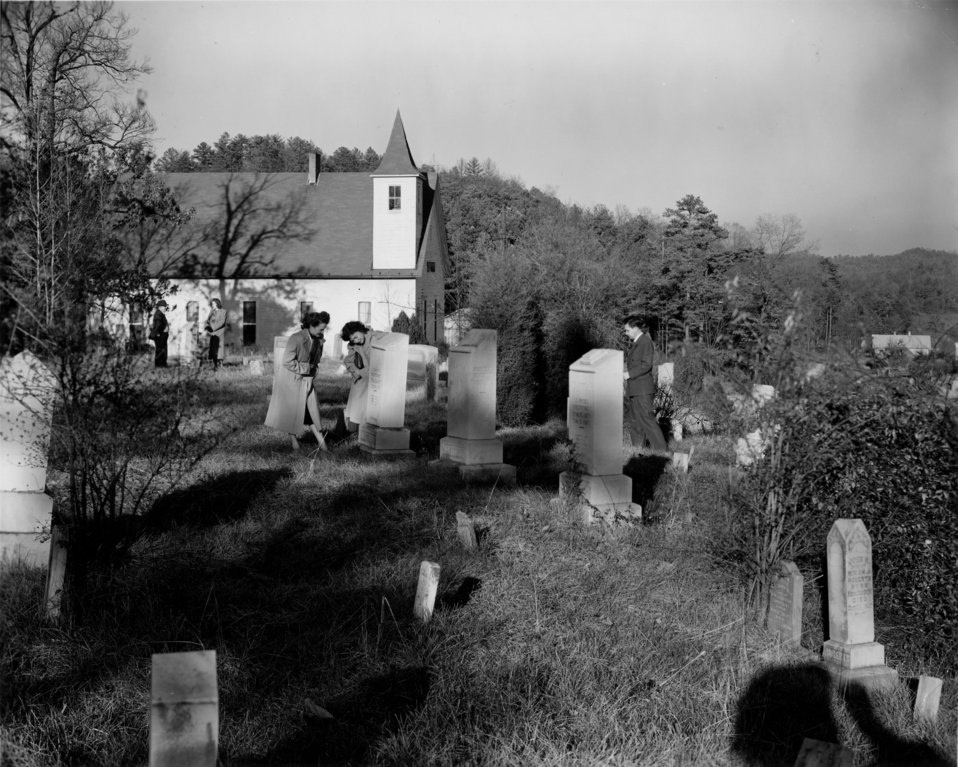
Wheat Cemetery and Church 1948 Oak Ridge

5329-1 DOE photo Ed Westcott 12-13-1948 Oak Ridge Tennessee